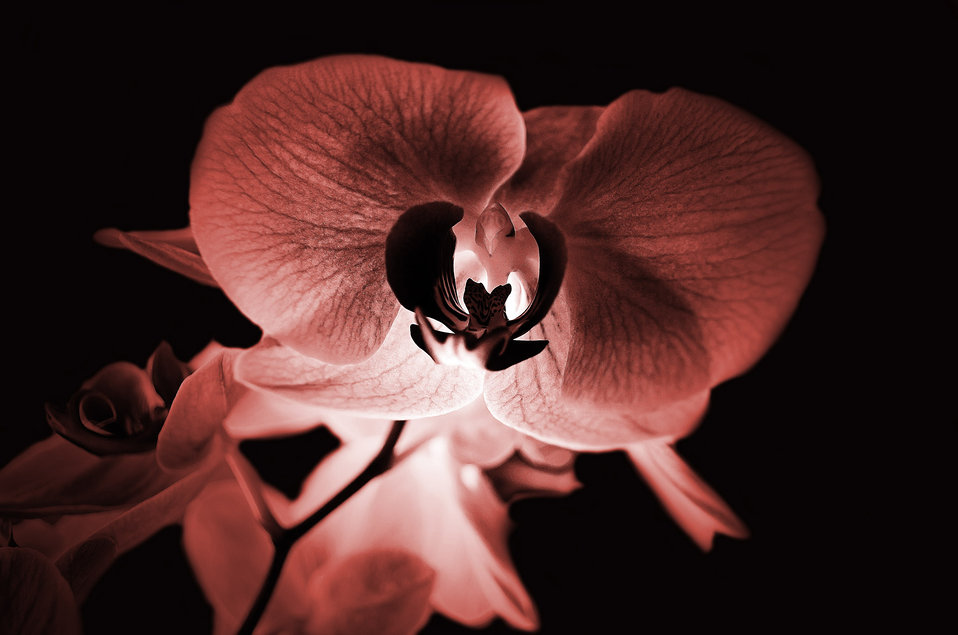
Orchid - macro.